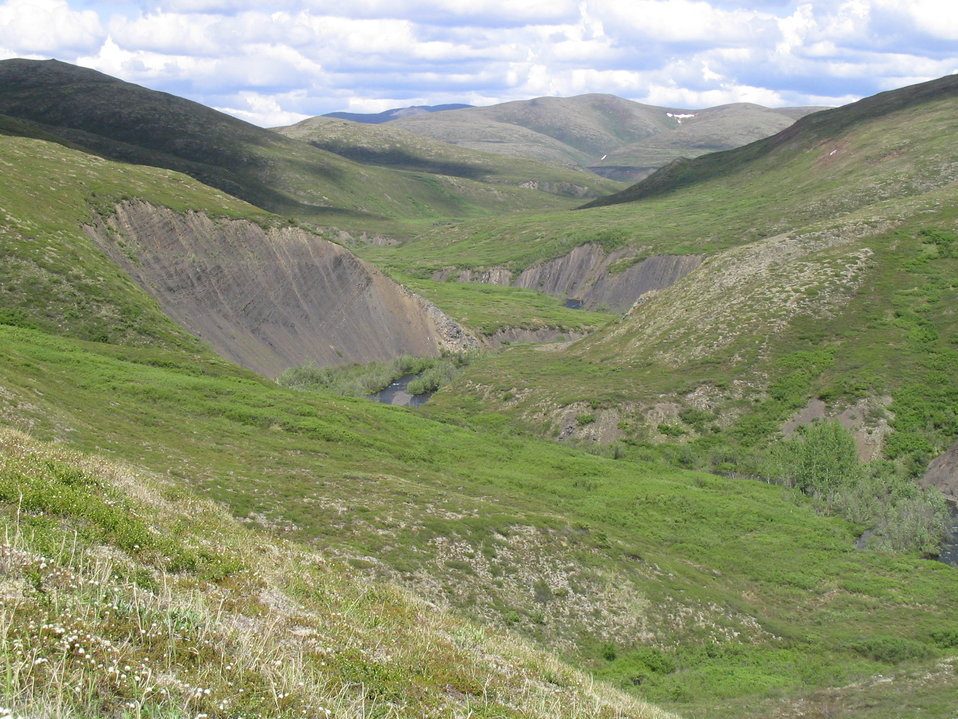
View during gyrfalcon survey

In 2004 a multi-year research project was initiated investigating Gyrfalcons within the YDNWR.

USFWS Yukon Delta NWR